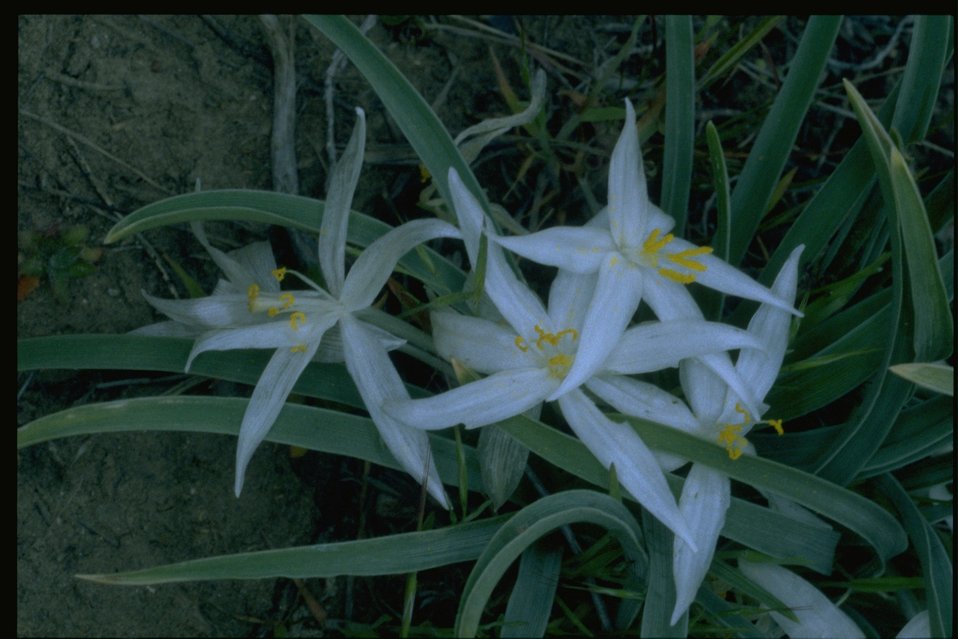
Medium shot of Star Lily; Sand Lily; Mountain Lily (Leucocrinum montanum).